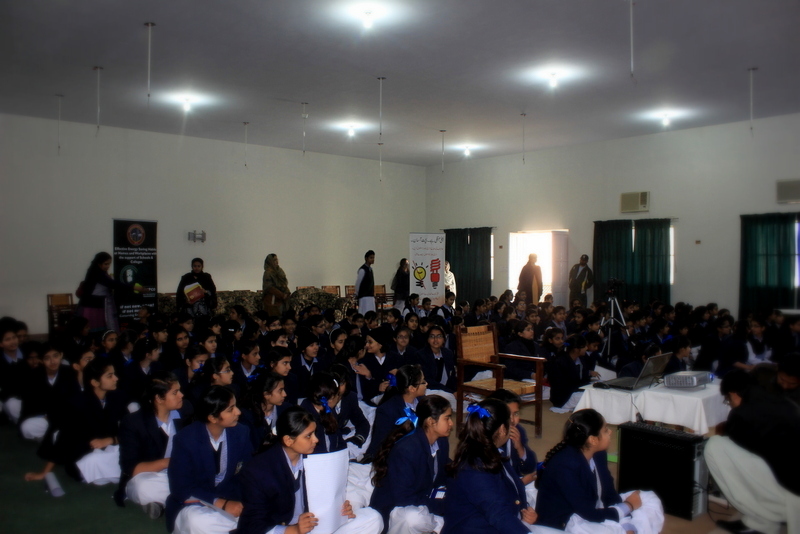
USAID Power Distribution Program-Energy Conservation Seminar at Multan Public School and Colleges for Girls, Multan.

Multan, January 16, 2013 - the USAID Power Distribution Program with the collaboration of MEPCO, held an Energy Conservation Seminar at USAID Power Distribution Program-Energy Conservation Seminar at Multan Public School & Colleges for Girls, Multan.
The purpose of the seminar was to:
• Inform students about the USAID Power Distribution Program and the role of Distribution companies in Pakistan.
• Educate students and teachers about the effective energy saving methods they can apply at homes, schools and workplaces.
More than 500 students along with principal & teachers attended the seminar